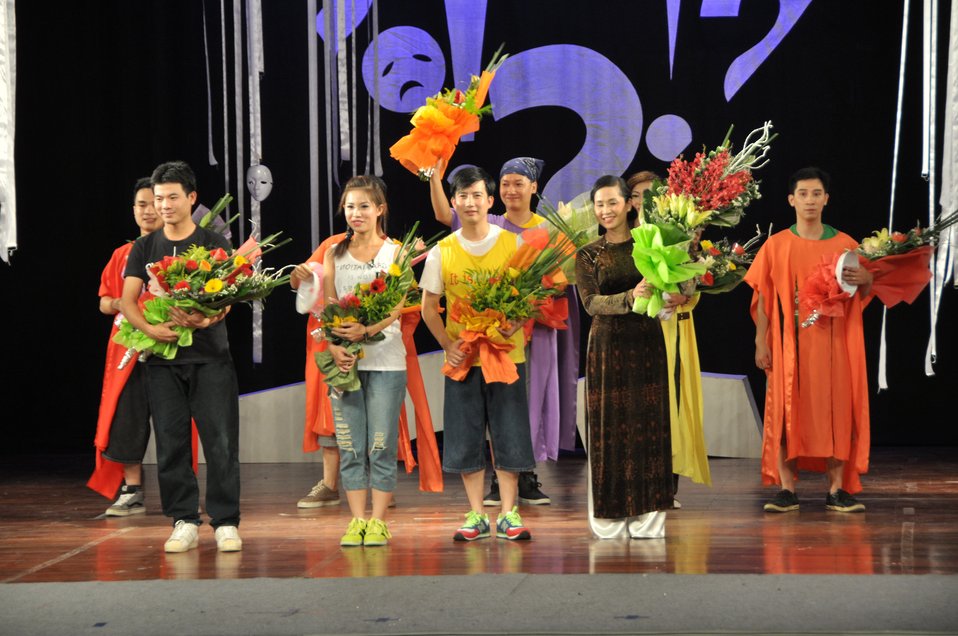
PEPFAR Musical Questions and Exclamations